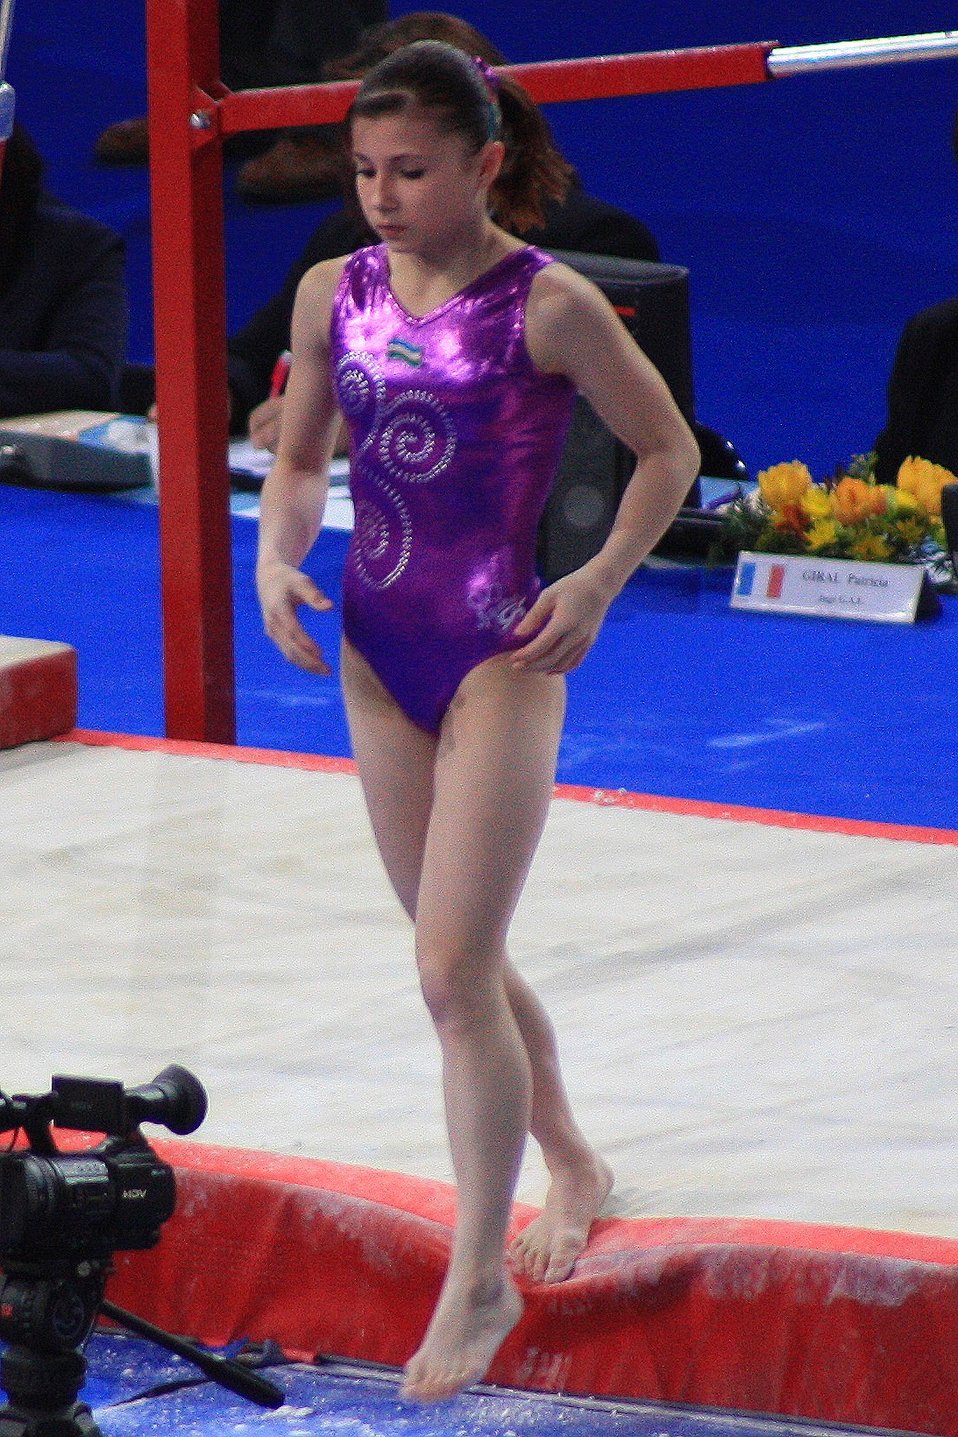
Fran√ßais†: Luisa Galiulina lors des qualifications des barres asym√©triques aux 17e Internationaux de France en 2010.